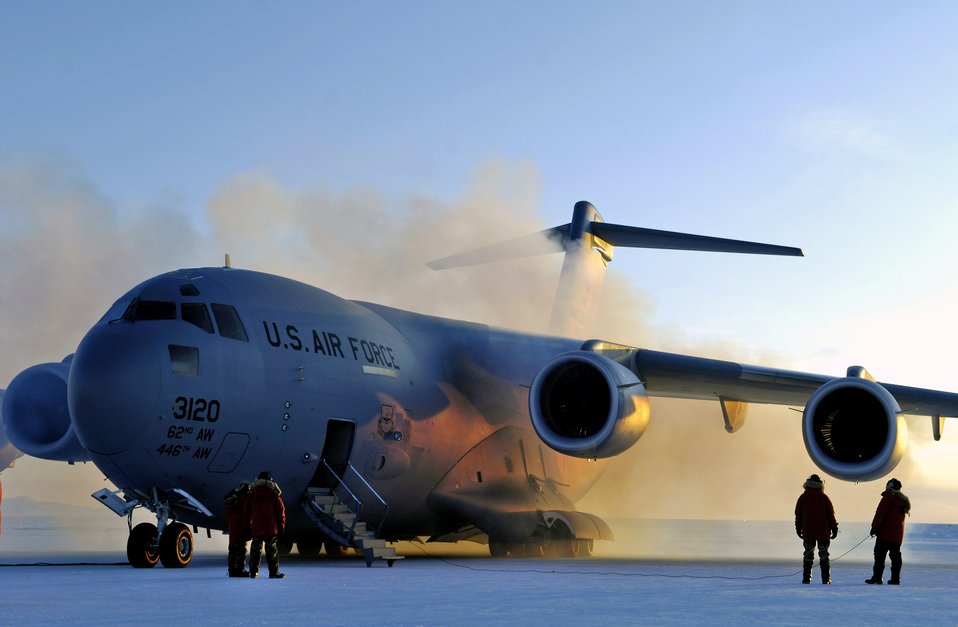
Winter flights to Antarctica wrap up

Exhaust vapors form around a C-17 Globemaster III after engine start-up during an Operation Deep Freeze winter fly-in mission Aug. 25 at Pegasus White Ice Runway, Antarctica. A C-17 and 31 Airmen from McChord Air Force Base, Wash., conducted the annual winter fly-in augmentation of scientists, support staff, food and equipment for the U.S. Antarctic Program at McMurdo Station, Antarctica.